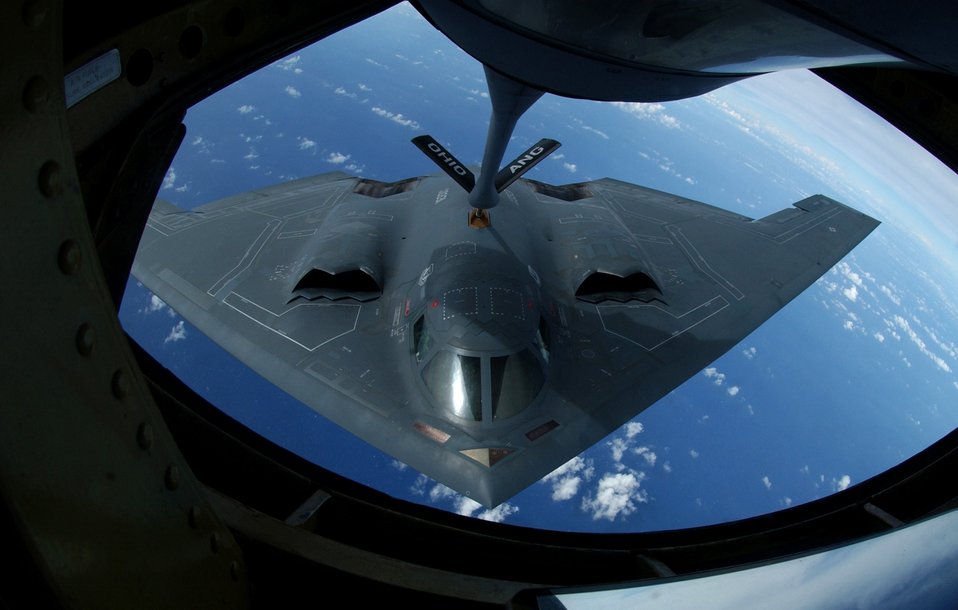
Gas and go

A KC-135 Stratotanker refuels a B-2 Spirit Nov. 20 over the Pacific Ocean. The B-2 and KC-135 are deployed to Andersen Air Force Base, Guam, to support U.S. Pacific Command's continuous bomber presence and theater security package operations.